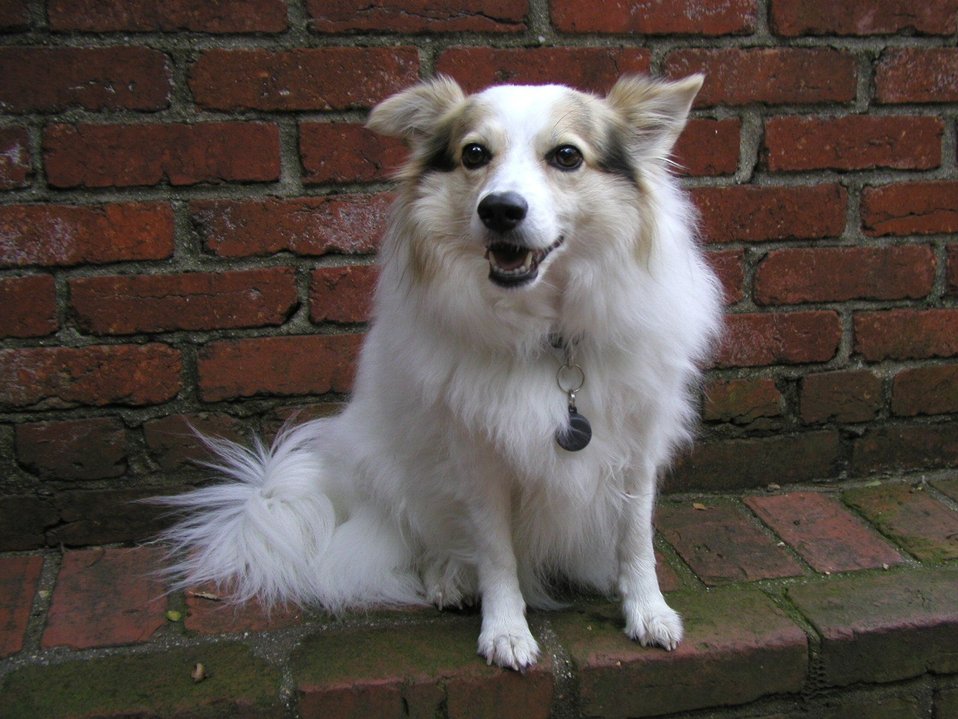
English:
Image title: White pretty dog Image from Public domain images website, http://www.public-domain-image.com/full-image/fauna-animals-public-domain-images-pictures/dogs-public-domain-images-pictures/white-pretty-dog.jpg.html